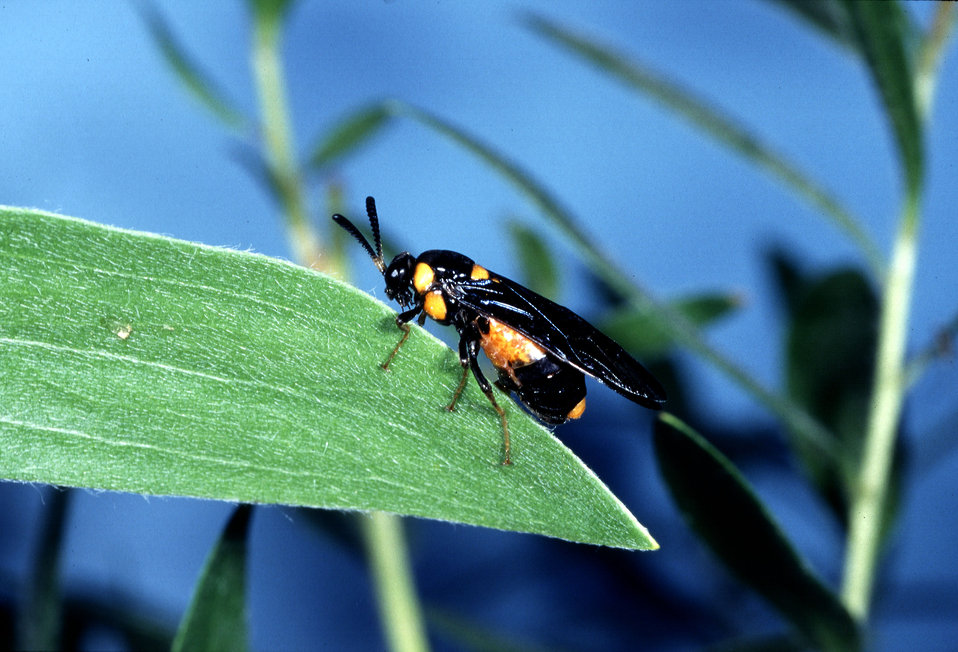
A melaleuca sawfly adult prepares to deposit eggs on a melaleuca leaf.